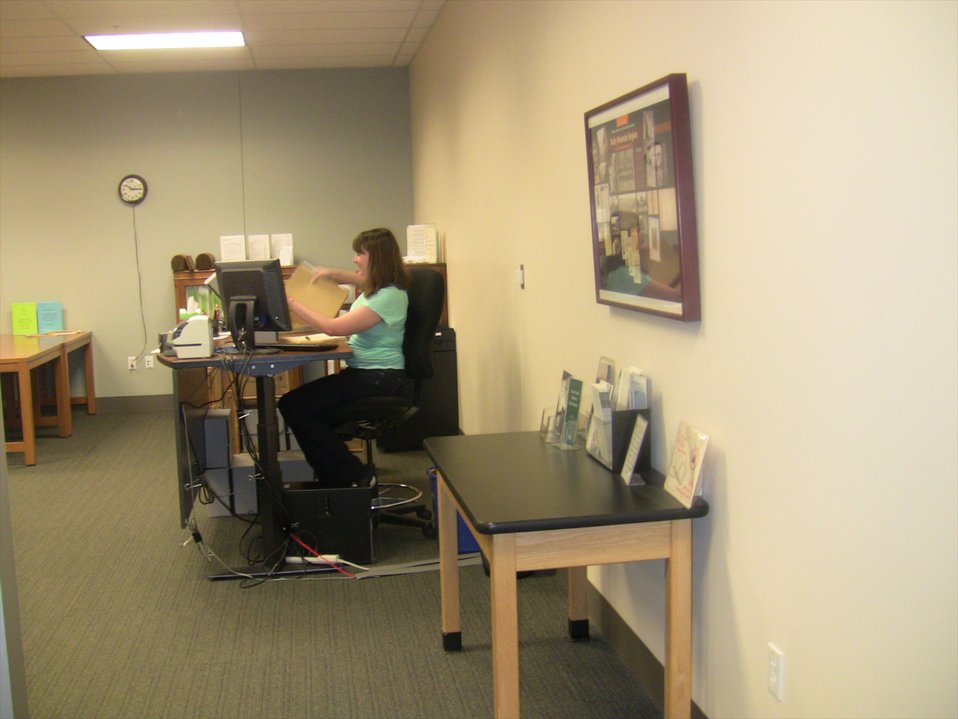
Denise Ruminski keeping watch in the textual research room; Location: National Archives at Denver, Broomfield, CO; Phot0grapher: Marene Baker